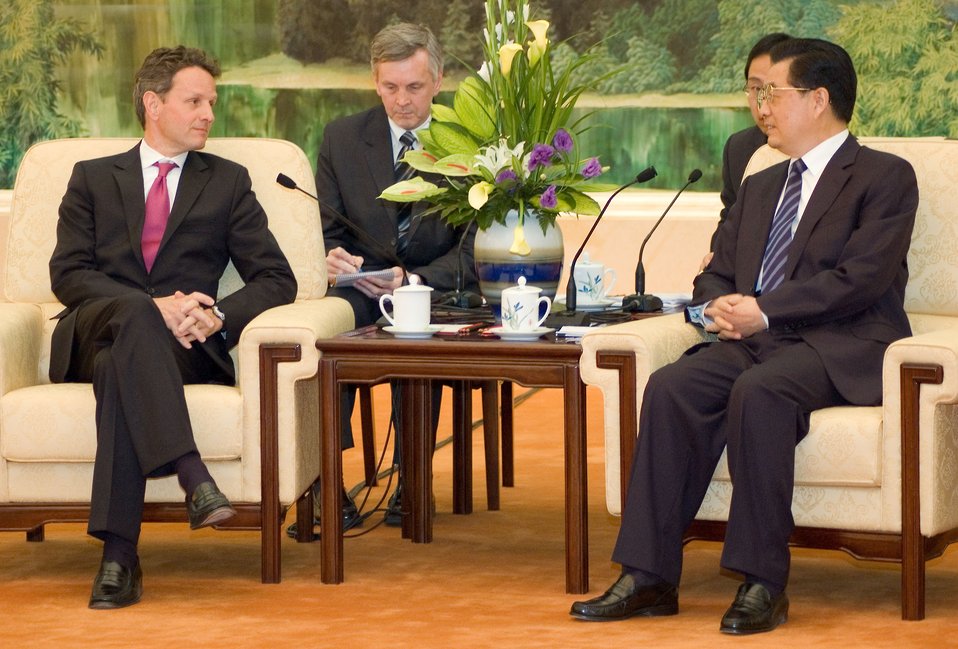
China trip: May 31-June 2 2009

Secretary Geithner meeting with Chinese President Hu Jintao at the Great Hall of the People.